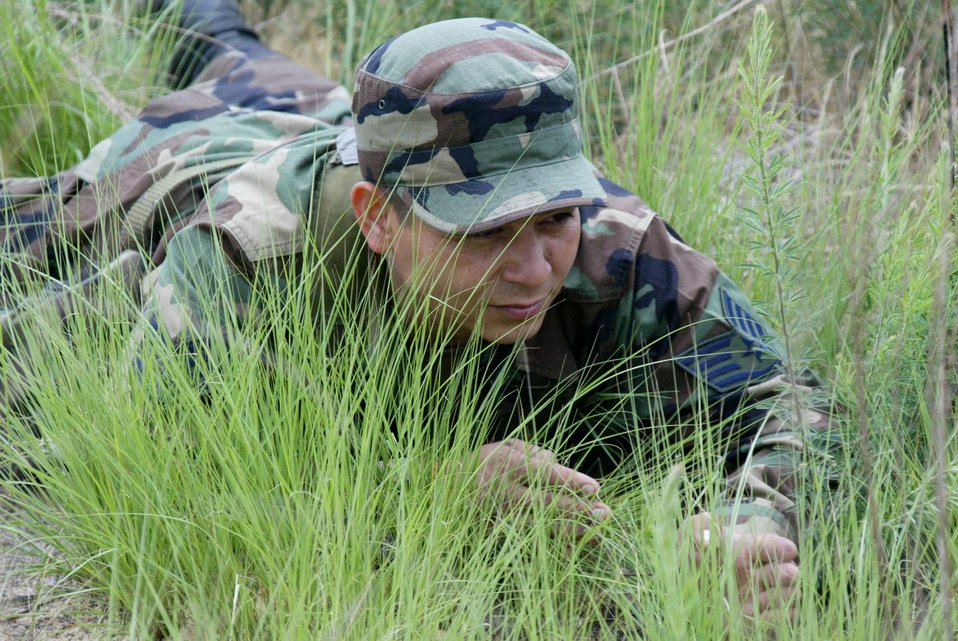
Air Force engineers take a jump

Staff Sgt. Anthony Sepongviwat takes part in a practice-run airfield seizure at Pope Air Force Base, N.C., on Saturday, April 22, 2006. He and 33 other Airmen are training with the Army's 82nd Airborne Division in a Joint Forced Entry Exercise. Sergeant Seponviwat is with the 820th Red Horse Squadron out of Nellis AFB, Nev.